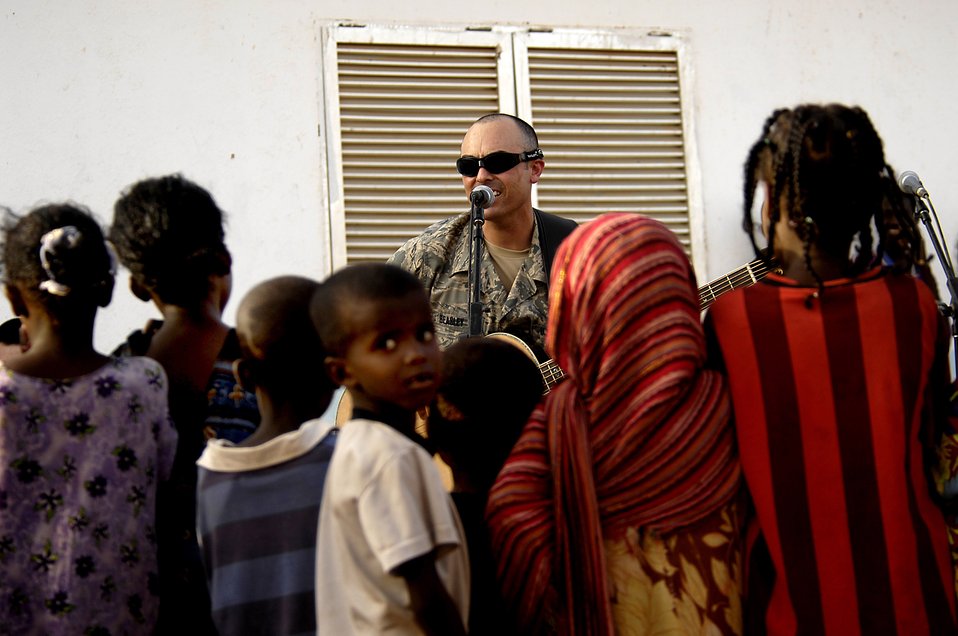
U.S. Air Force Band Concert, Djibouti

Senior Airman John D. Beasley performs for villagers May 22 in Negad, Djibouti. The band is deployed to support Combined Joint Task Force - Horn of Africa out of Camp Lemonier, Djibouti. Airman Beasley is the bass player with the Air Force Central Command band, Falcon.